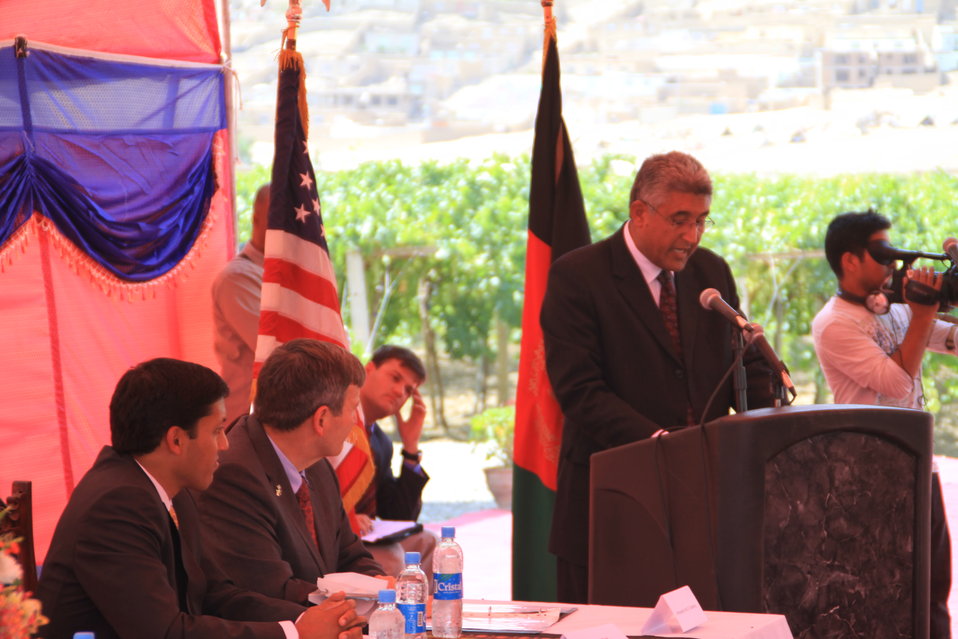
Badam Bagh Farm